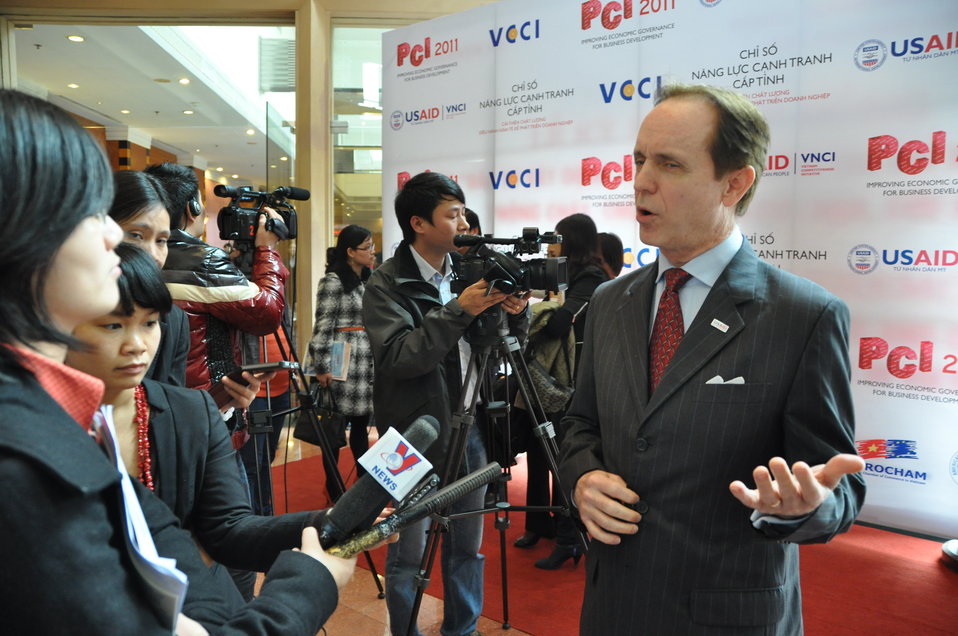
USAID Mission Director Francis Donovan at the Provincial Competitiveness Index 2011 Launch